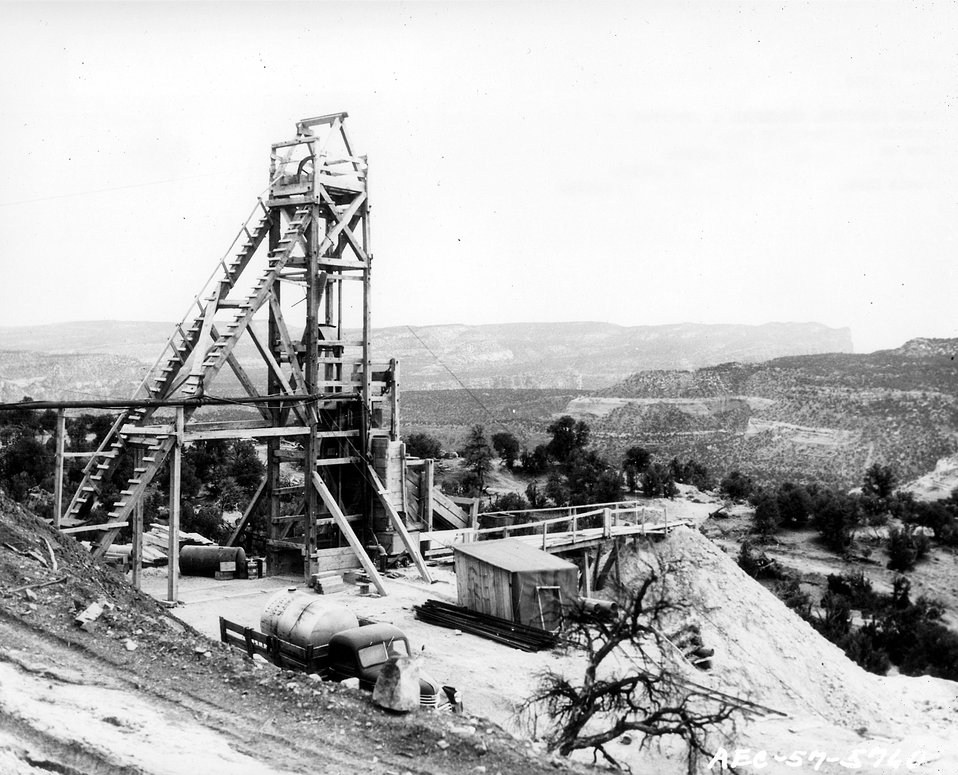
Vertical shaft operation with wooden head frame at uranium mine on Colorado Plateau. c. 1957